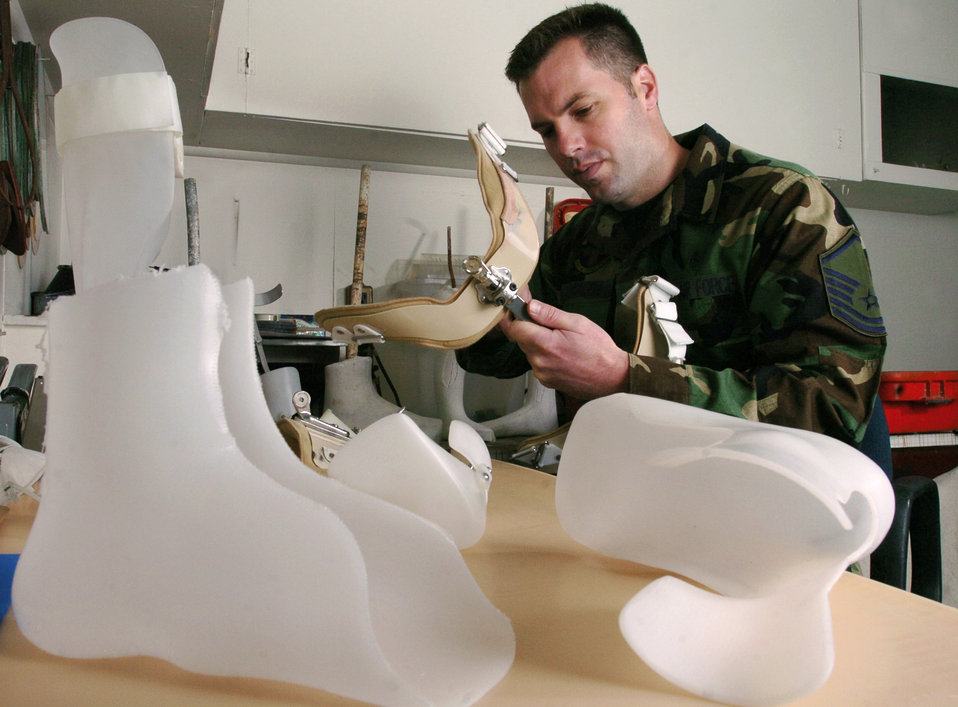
Airman helps people get back on their feet

YOKOTA AIR BASE, Japan -- Master Sgt. Nathan Simonson makes a shoulder orthosis. The orthotic lab technician makes, assembles and repairs orthopedic appliances for patients who require protective support or correction because of bone or muscle injury, impairment disease or deformity. He is assigned to the 374th Medical Group here.